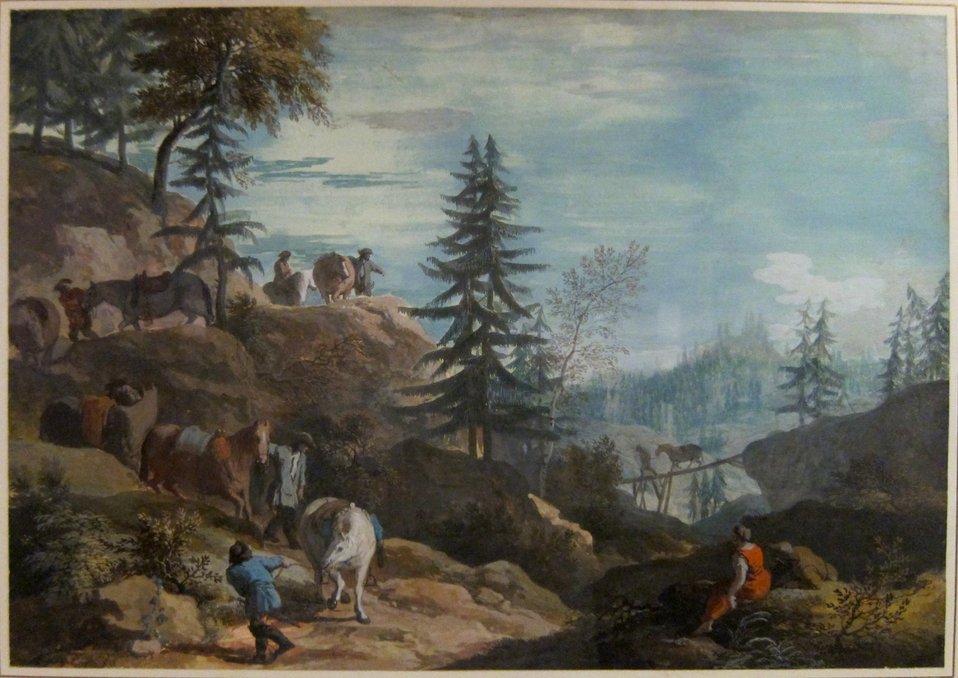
'Landscape with Peasants' by Marco Ricci, gouache on kidskin, 1720, HMA